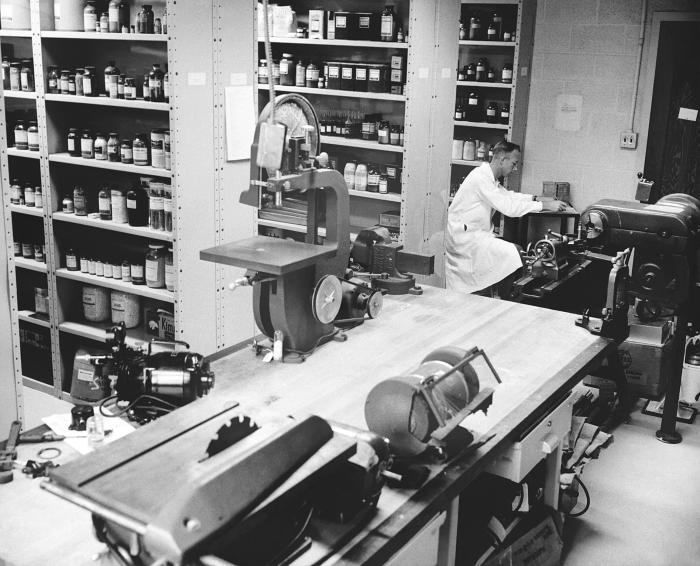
This historic 1963 photograph depicted a technician inside a storage room, which also acted as a machine shop on the Centers for Disease Control (CDC) premises.